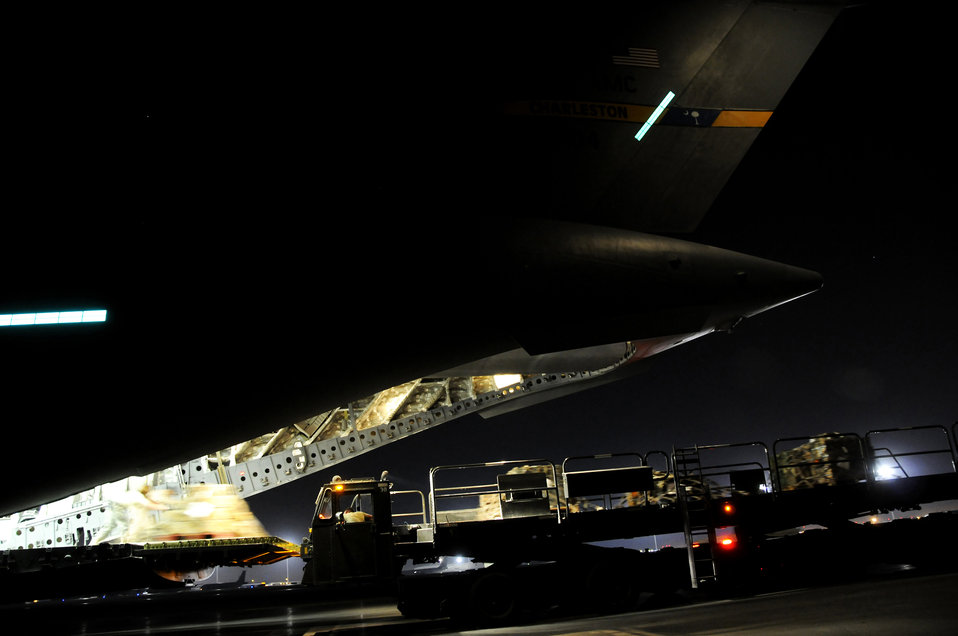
Airlift delivers for warfighters

Airmen unload cargo from the back of a C-17 Globemaster III Nov. 19 at an air base in Southwest Asia. The C-17 has been delivering cargo to and from different bases in the area of responsibility in support of Operation Iraqi Freedom.